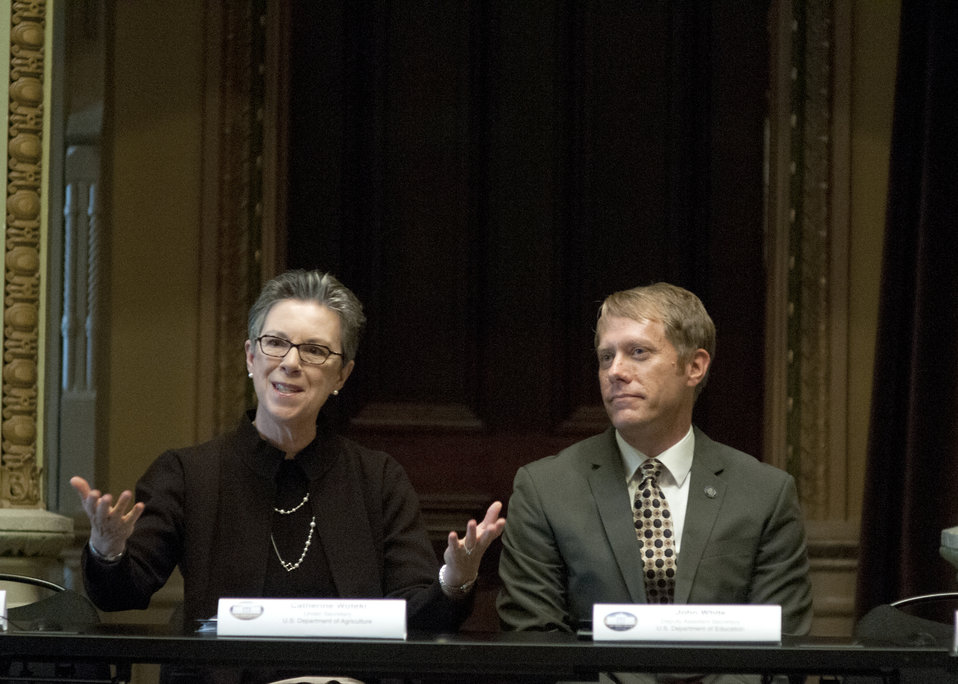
Agriculture Under Secretary for Research, Education and Economics (REE) Catherine Wotecki speaks at the Champions of Change awards program as Education Deputy Assistant Secretary John White listens at the Executive Office Building in Washington, D.C. on Tuesday, Oct. 9, 2012. The Champions of Change program was created to honor ordinary Americans doing great work in their communities. Each week, a different sector is highlighted and groups of Champions, ranging from educators, entrepreneurs andcommunity leaders, are recognized for the work they are doing to serve and strengthen their communities.